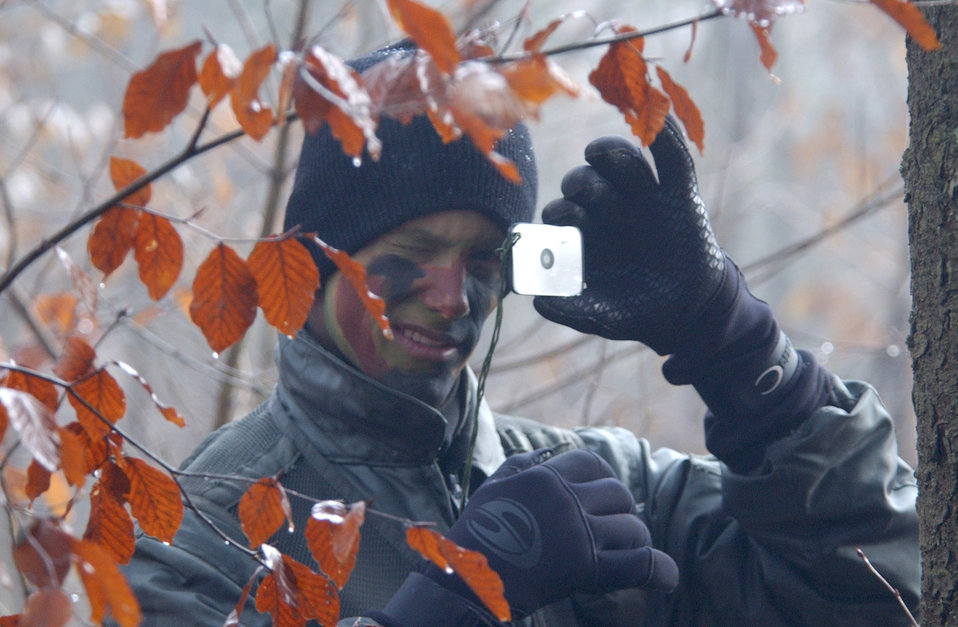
Black forest

OBERWIESS, Germany -- Airman 1st Class Christopher Gerard uses camouflage to conceal himself during a recent field-combat certifiable training course at a U.S. facility here. Gerard is an air crew life support apprentice with the 23rd Fighter Squadron at Spangdahlem Air Base, Germany.